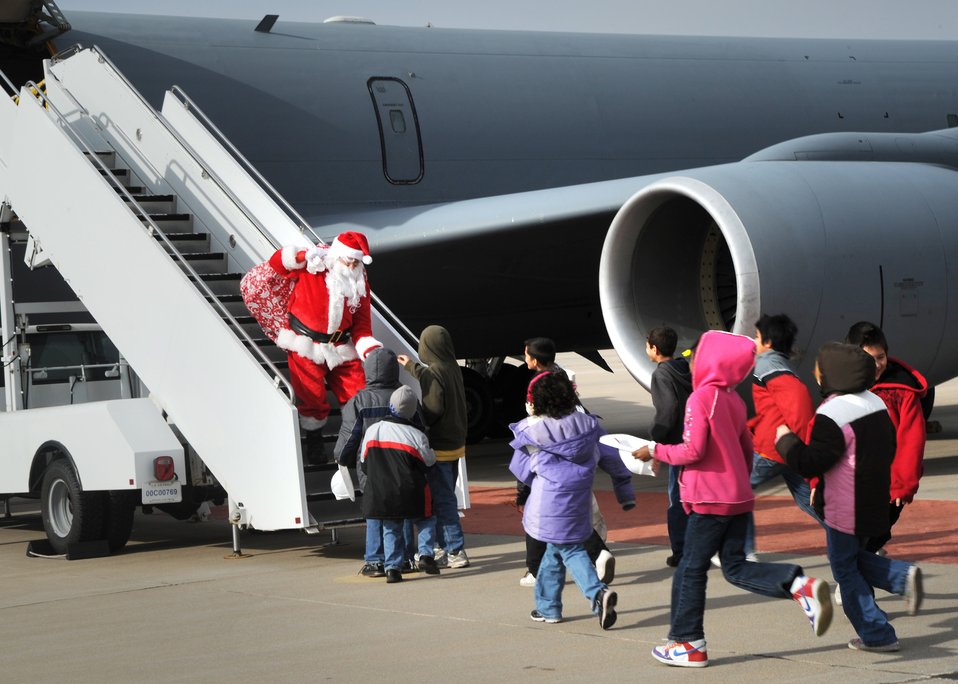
Nice sleigh, Santa!

Santa Claus, also known as Col. Edsel Frye, delivers gifts from his KC-135 Stratotanker to children from the Sedgewick County Big Brothers Big Sisters at McConnell Air Force Base, Kan., Dec. 22, 2010. Colonel Frye is the commander of the 931st Air Refueling Group.